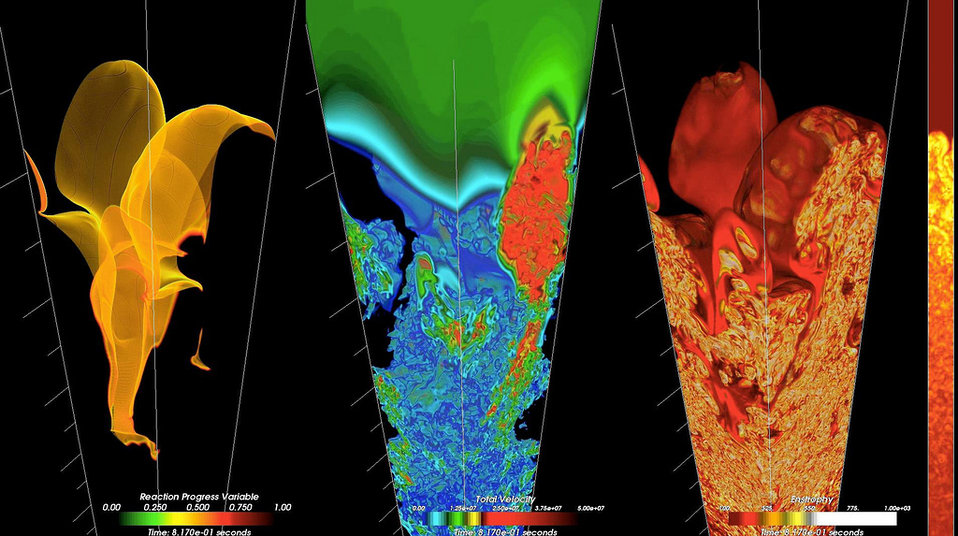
THREE VISUALIZATIONS OF NUCLEAR COMBUSTION IN A SUPERNOVA, DEVELOPED ON ARGONNE NATIONAL LABORATORY'S IBM BLUE GENE/ P SUPERCOMPUTER, ALLOW US TO PEER INTO THE HEART OF EXPLODING STARS.

The leftmost frame depicts the frame surface itself, while the other frame represents the combustion's velocity and enstrophy, two fluid dynamics that dictate how the combustion flows through the entire system. Supernovae play a key note in our theories of expansion of their universe and the nature of dark energy.